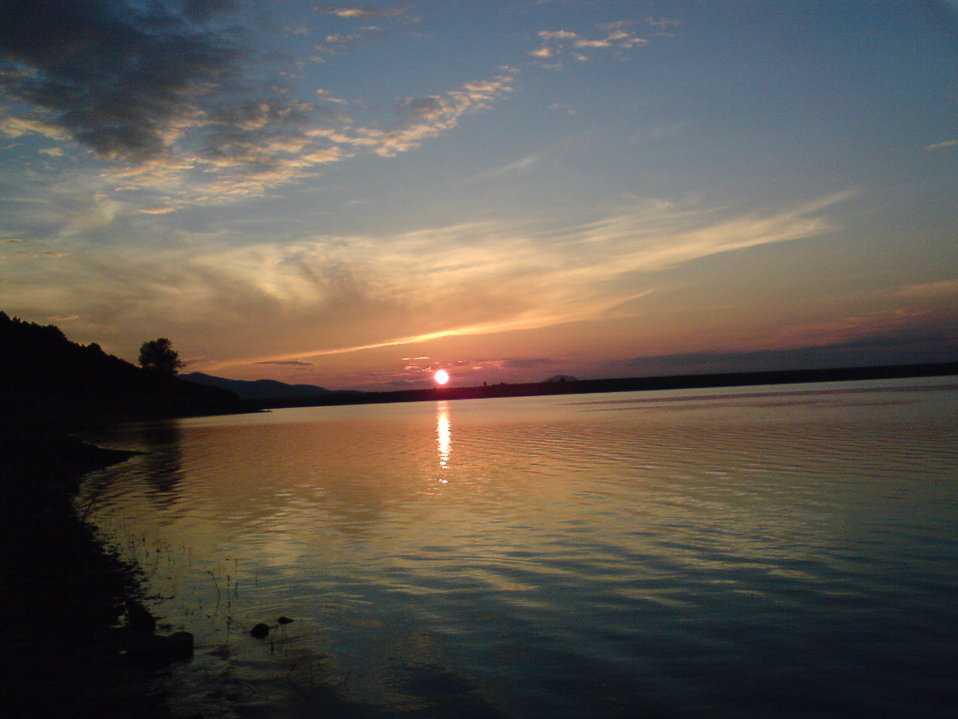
Rabisha Lake